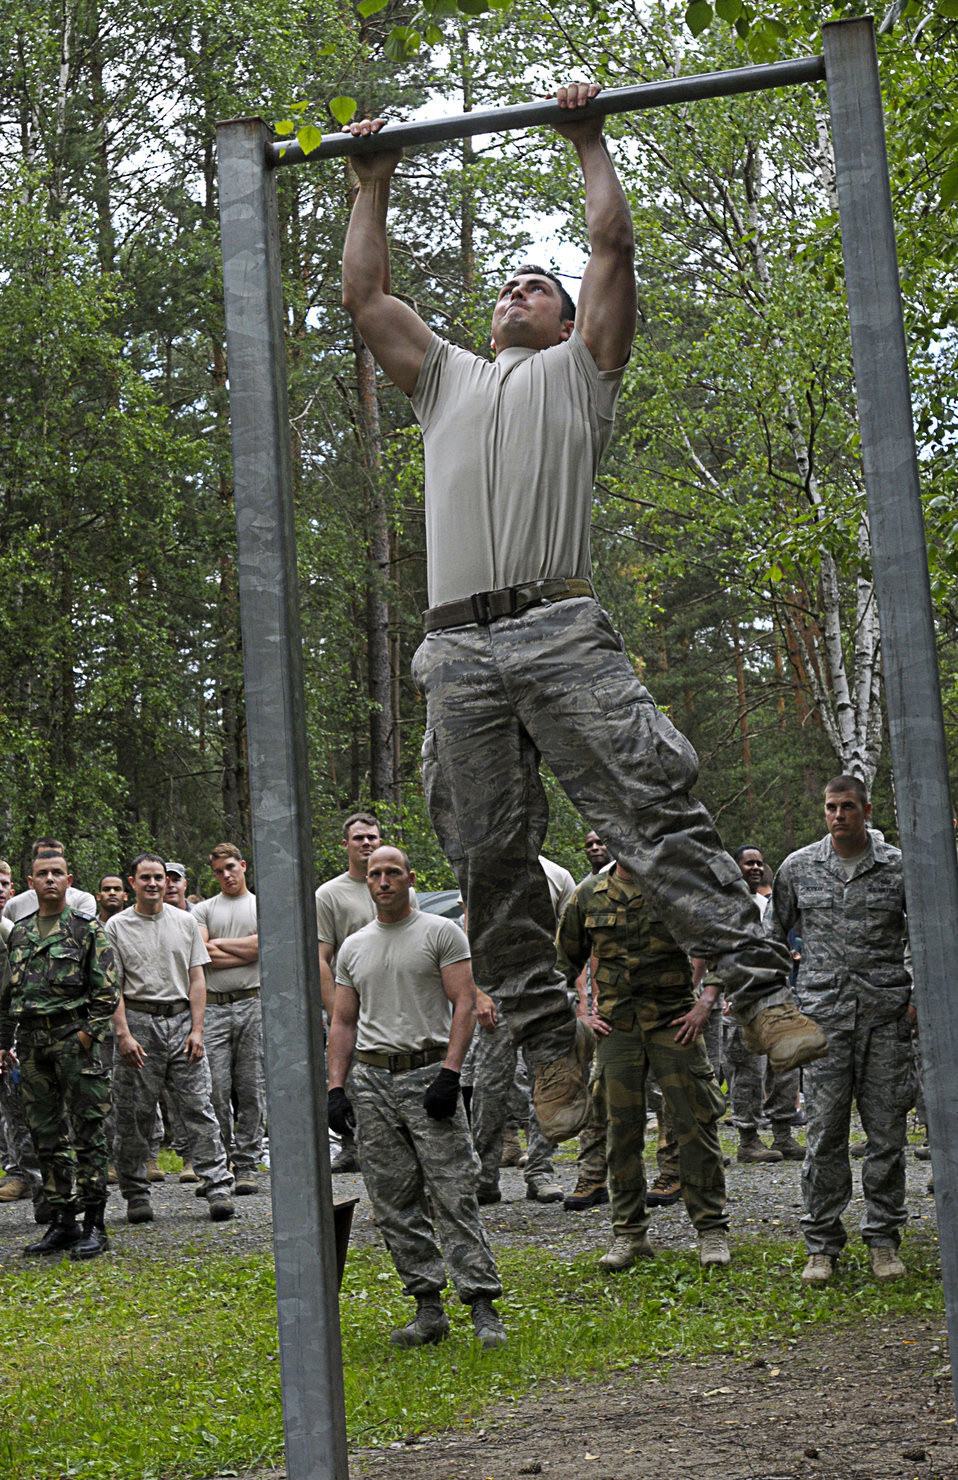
Allied Strike 2011

Staff Sgt. Nathan Archambeault participates in an obstacle course competition June 23, 2011, as part of Allied Strike at Grafenwoehr Training Area, Germany. Sergeant Archambeault is assigned to the 4th Air Support Operations Group.